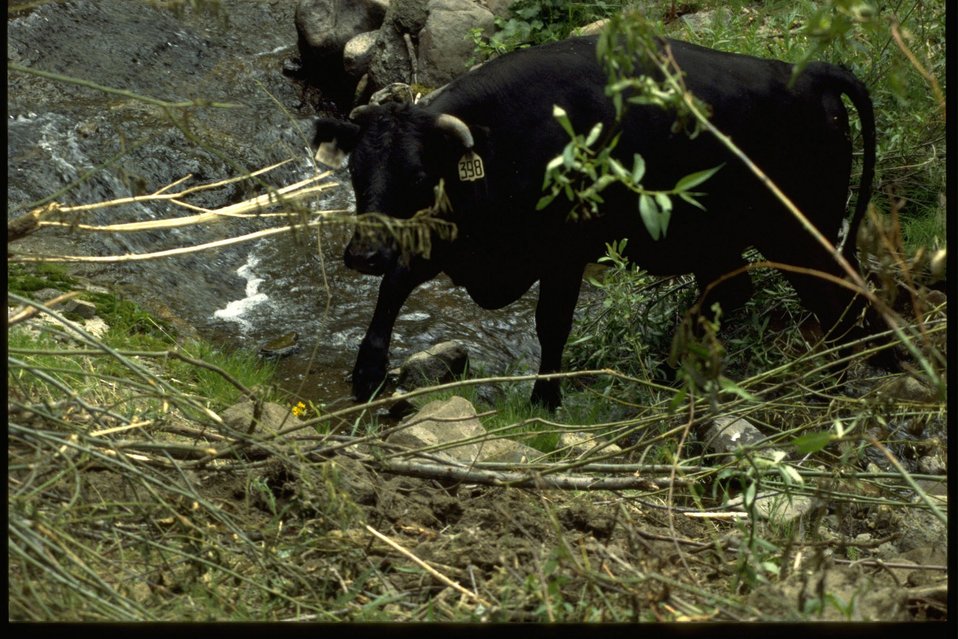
An Ox.